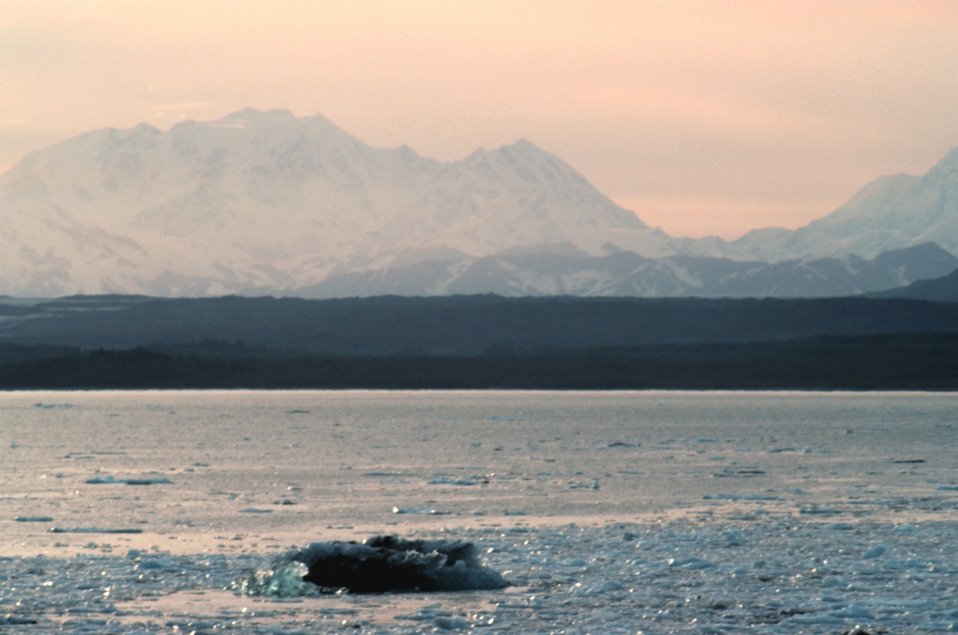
Upper Cook Inlet.